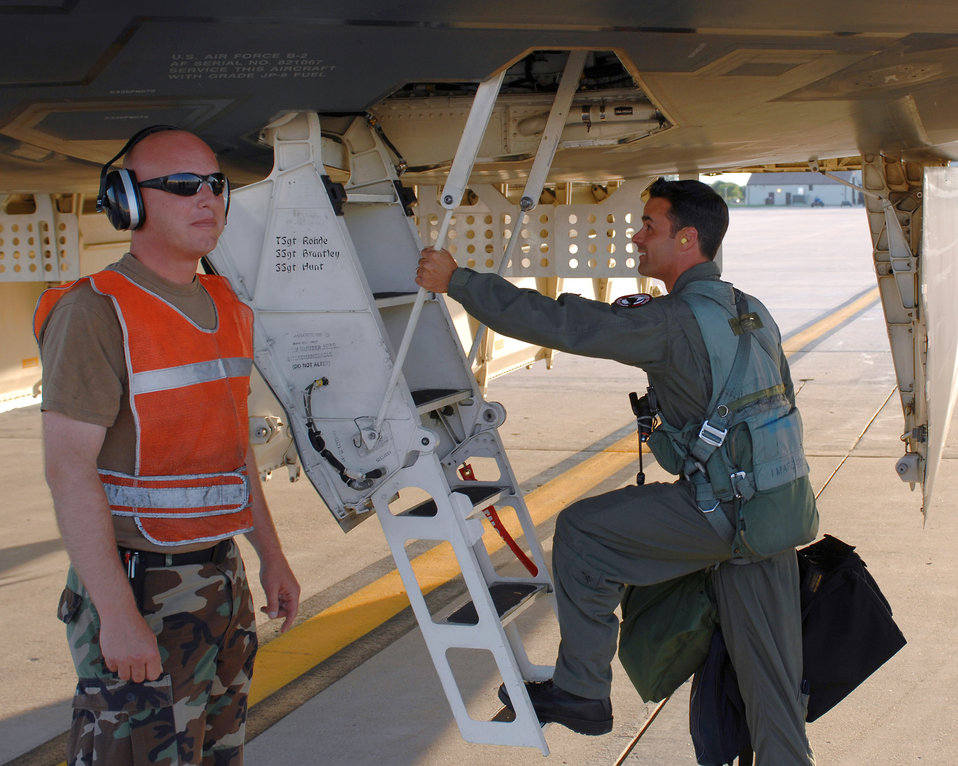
Whiteman Airmen make first all-air Guard B-2 flight

Maj. David Thompson prepares to board a B-2 Spirit June 18 at Whiteman Air Force Base, Mo. The flight was piloted and launched solely by Missouri Air National Guard personnel. Major Thompson is a 131st Fighter Wing pilot.